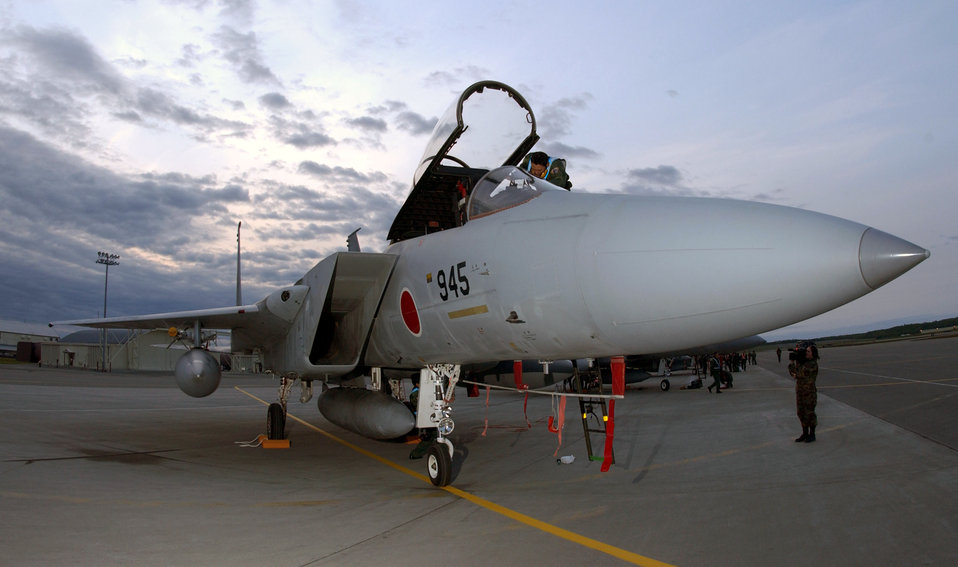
Under Alaskan skies

ELMENDORF AIR FORCE BASE, Alaska -- A Japanese air self defense force F-15J fighter sits under the Alaskan sunset after its historic arrival for Cooperative Cope Thunder on May 27. The exercise, set for June 5 to 20, represents the first time the Japanese have deployed fighter aircraft onto North American soil for an exercise.